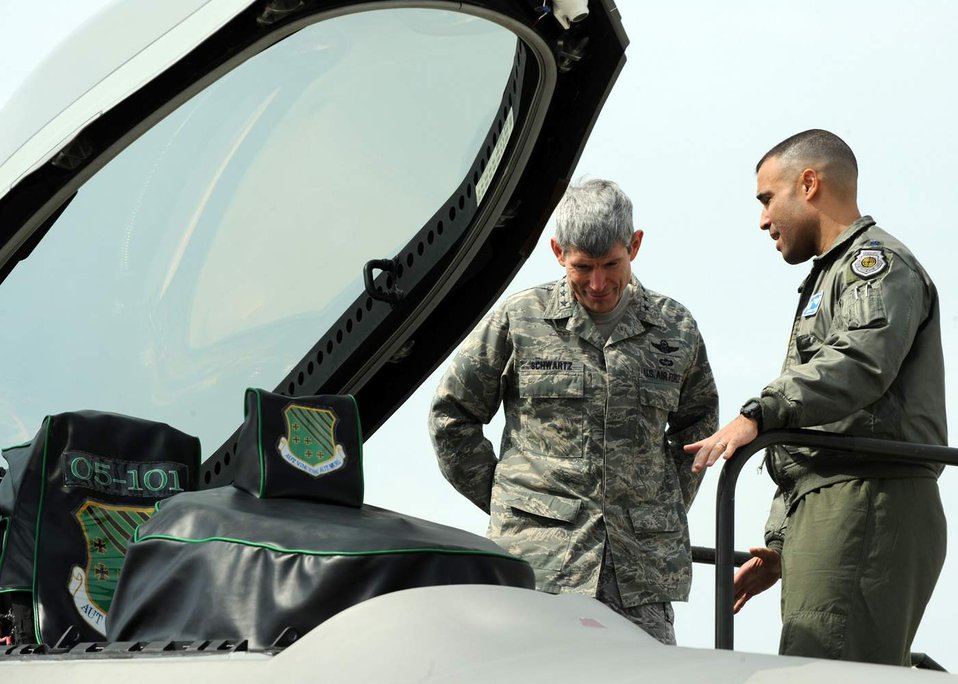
Gen. Schwartz to Airmen: 'We are a family'

General Norton Schwartz is briefed by Lt. Col. Adrian Spain on the capabilities of the F-22 Raptor March 11 at Langley Air Force Base, Va. General Schwartz, the Air Force chief of staff, reviewed Langley AFB's warfighting capabilities, viewed an F-22 demonstration, and held a town hall meeting with Airmen. Colonel Spain is the 94th Fighter Squadron commander.